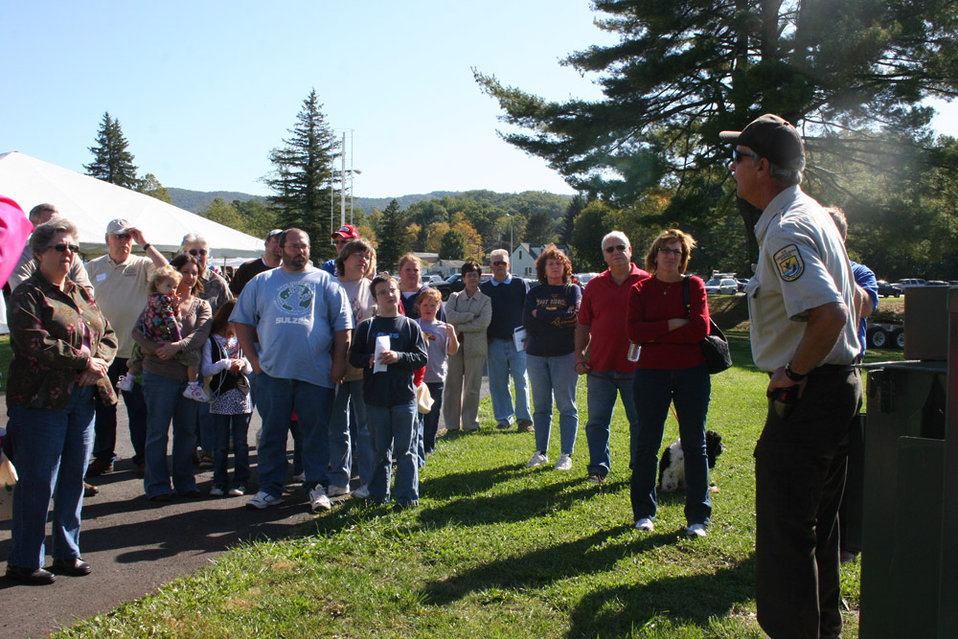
Freshwater Folk Festival (22)